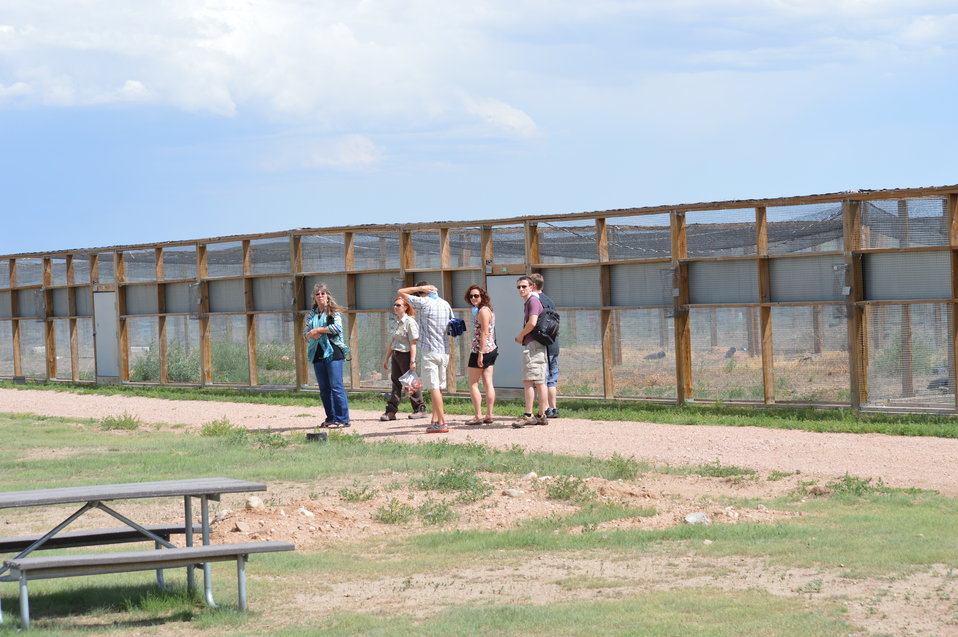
Interns visit the NBFFCC

In the summer of 2012, USFWS Region 6 interns visited the National Black-footed Ferret Conservation Center (NBFFCC) in Colorado to learn how the program reintroduces the endangered Black-footed ferret back into its native habitat.